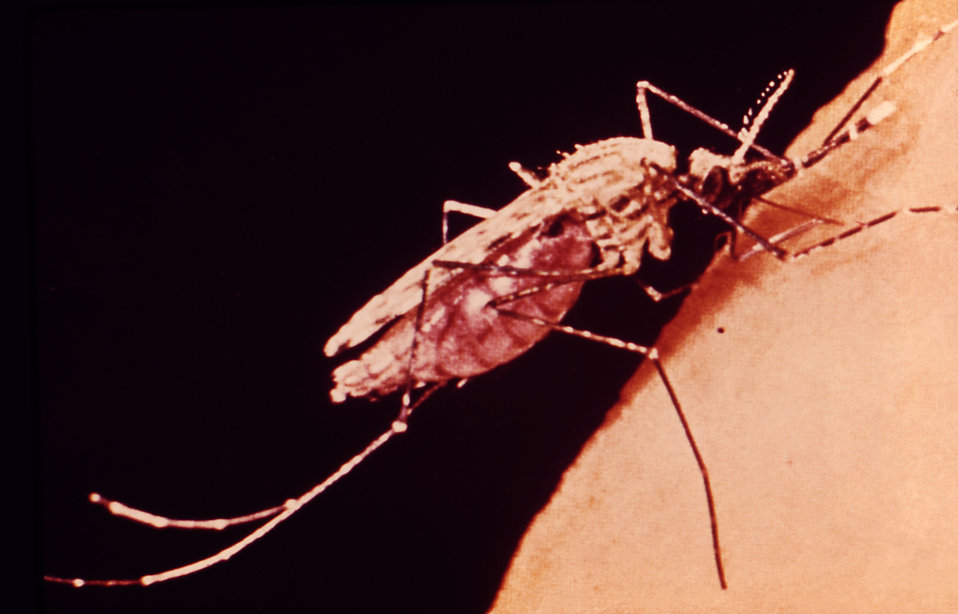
This is a female Anopheles mosquito feeding on a human arm. Only the female mosquito feeds on blood.